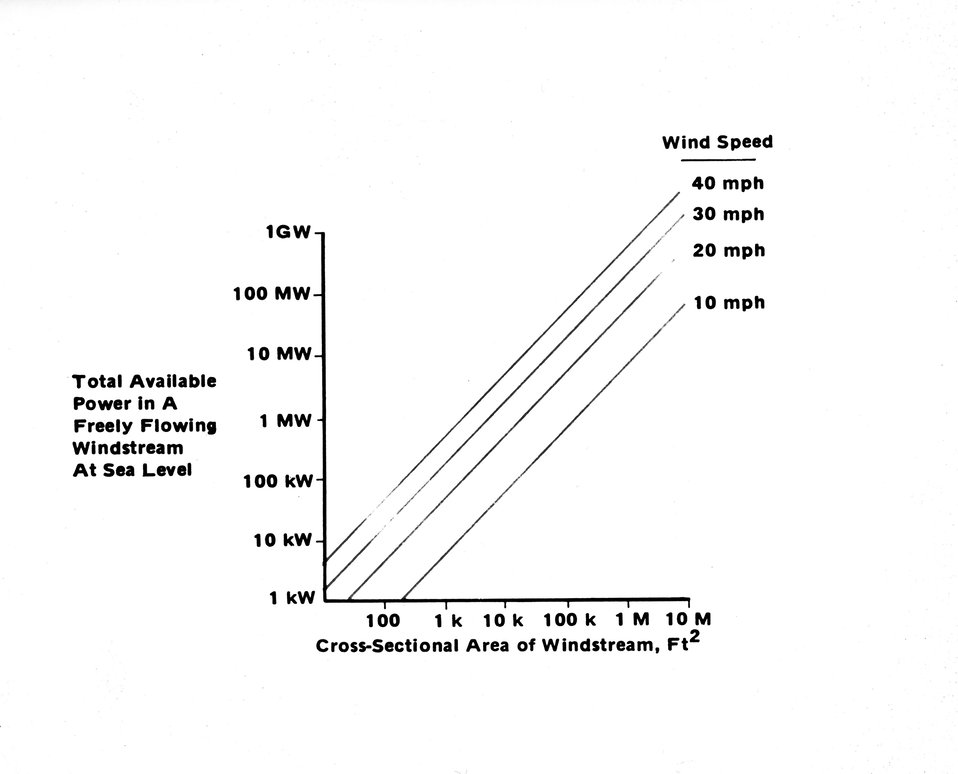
If the space covered by rotating blades of a large wind machine can be thought of as a cross-sectional area of wind-stream, it can be seen that as the size of the area increases and the wind speed increases, there is more available power in the wind. c. 1977